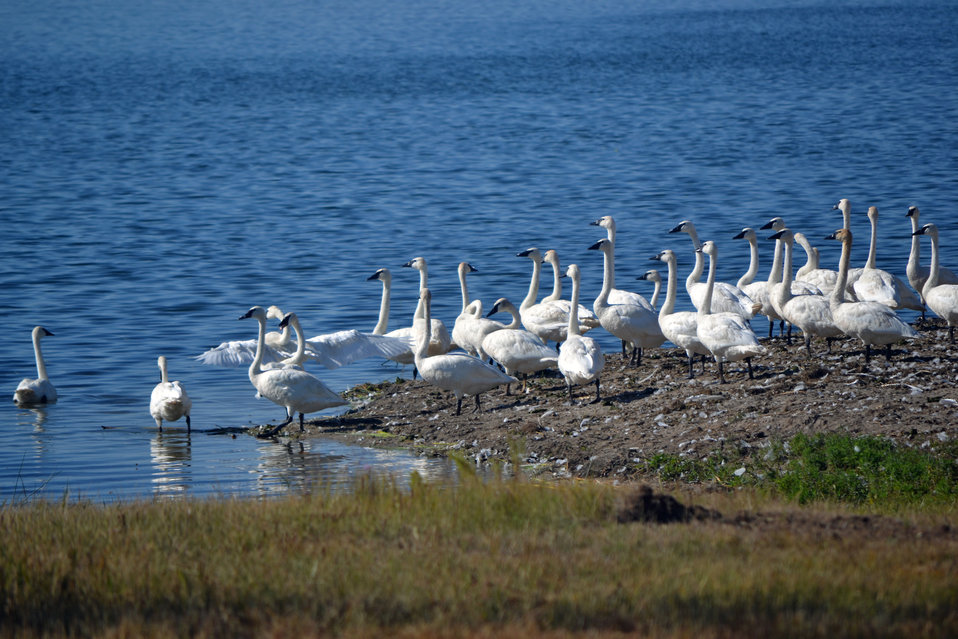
Trumpeter Swan

Trumpeter swans flock at Tamarac National Wildlife Refuge.